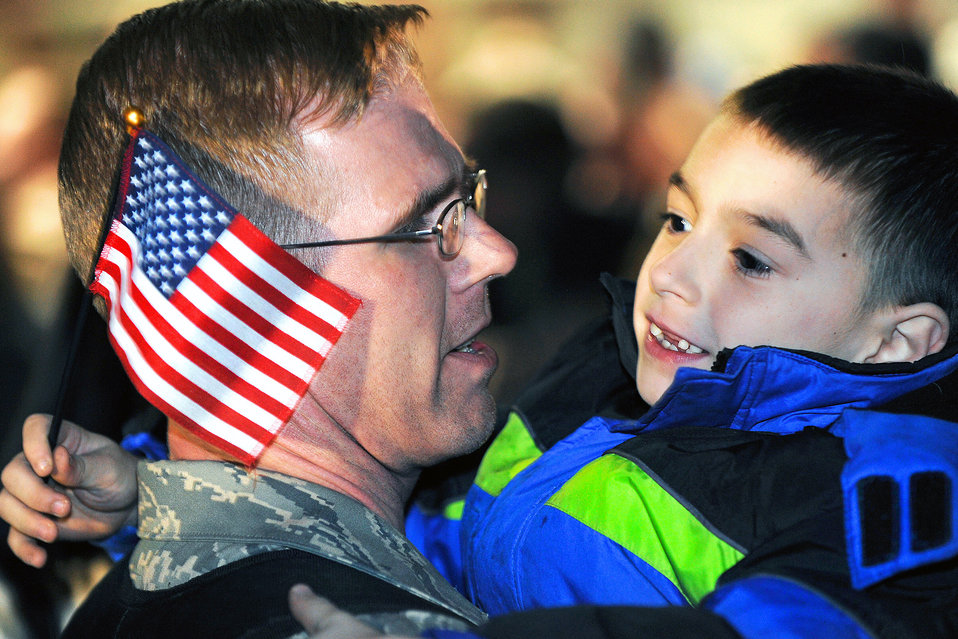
I lost my front teeth, Dad!

Tech. Sgt. Joe Jackson hugs his son Jan. 31 at Ellsworth Air Force Base, S.D. Approximately 300 base Airmen returned from deployments supporting operations Iraqi Freedom and Enduring Freedom. Sergeant Jackson is a munitions controller with the 28th Munitions Squadron.